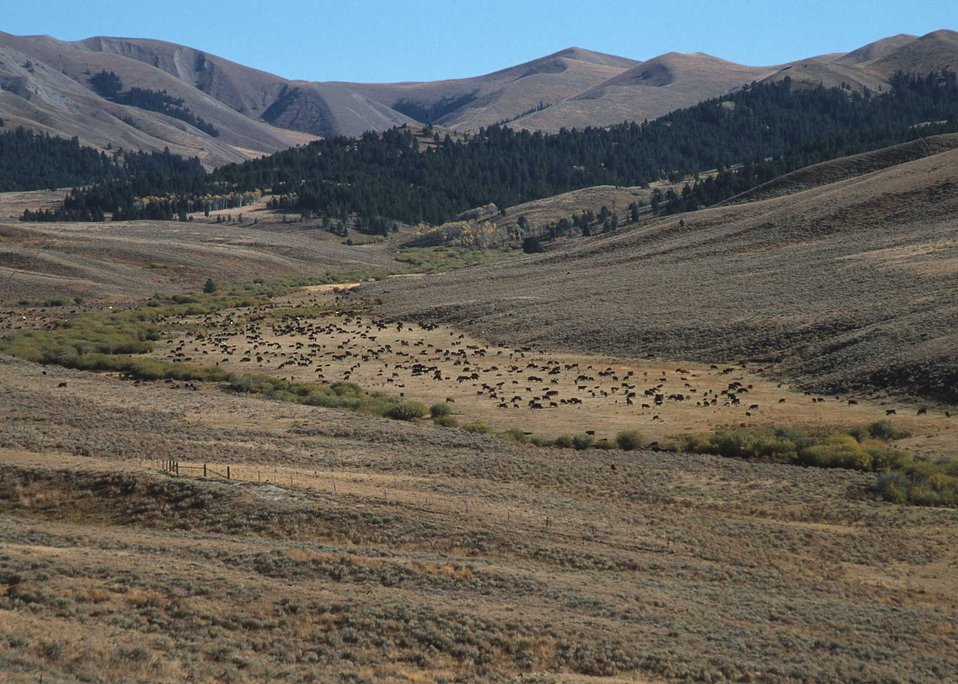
Rangeland under rotational grazing.